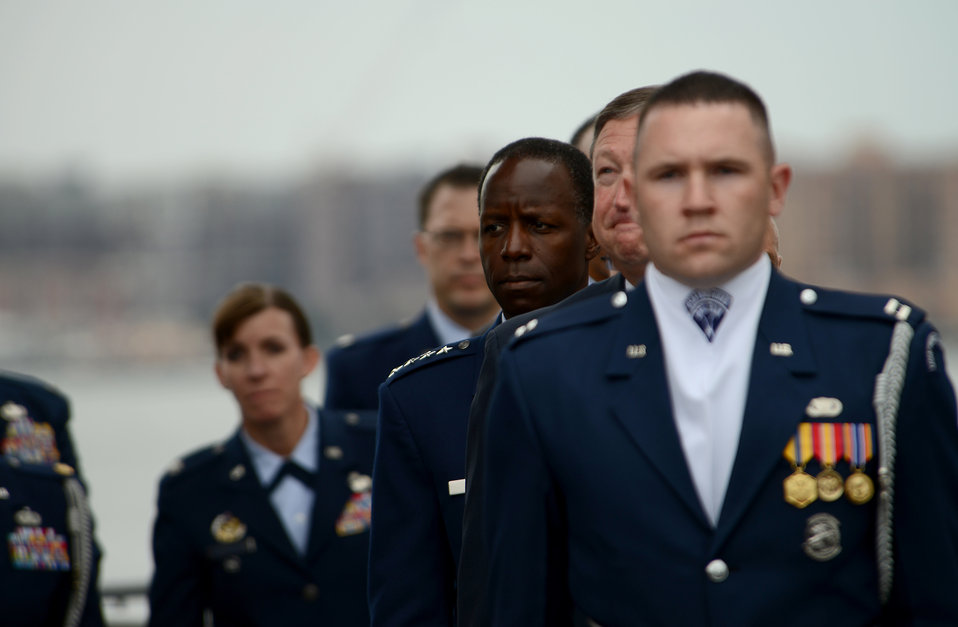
Yankees game

Gen. Edward A. Rice, center, alongside Secretary of the Air Force Michael Donley, prepare to walk out for the opening ceremony of Air Force Week 2012 in New York City on Aug. 19.